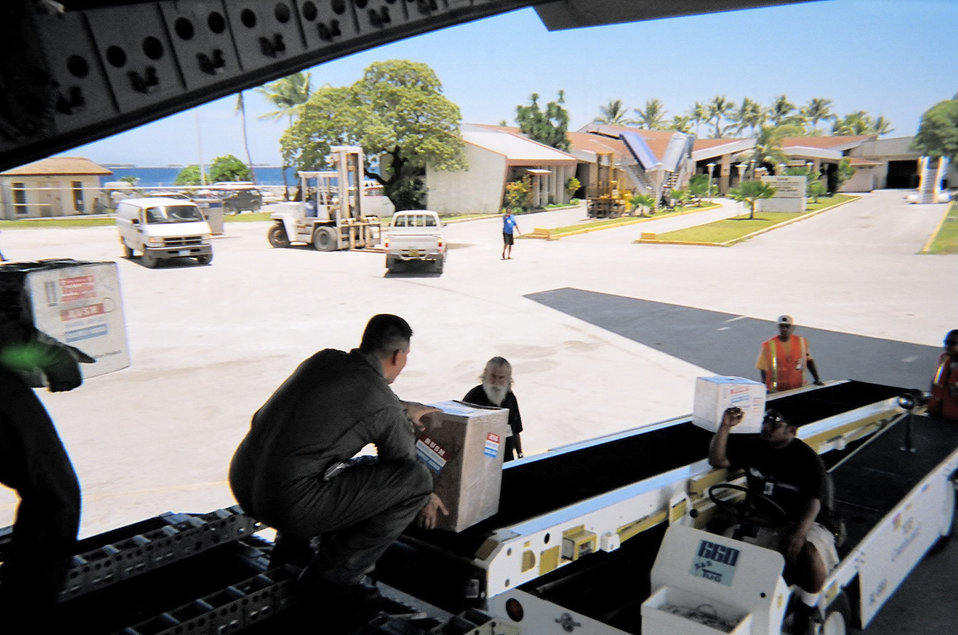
Medical mercy mission

MAJURO, Marshall Islands -- Airmen deliver emergency lifesaving medicine and supplies to the Marshall Islands airport after the city's hospital was decimated by fire. All patients had to be evacuated, and the Air Force special delivery allowed doctors to continue treating them.